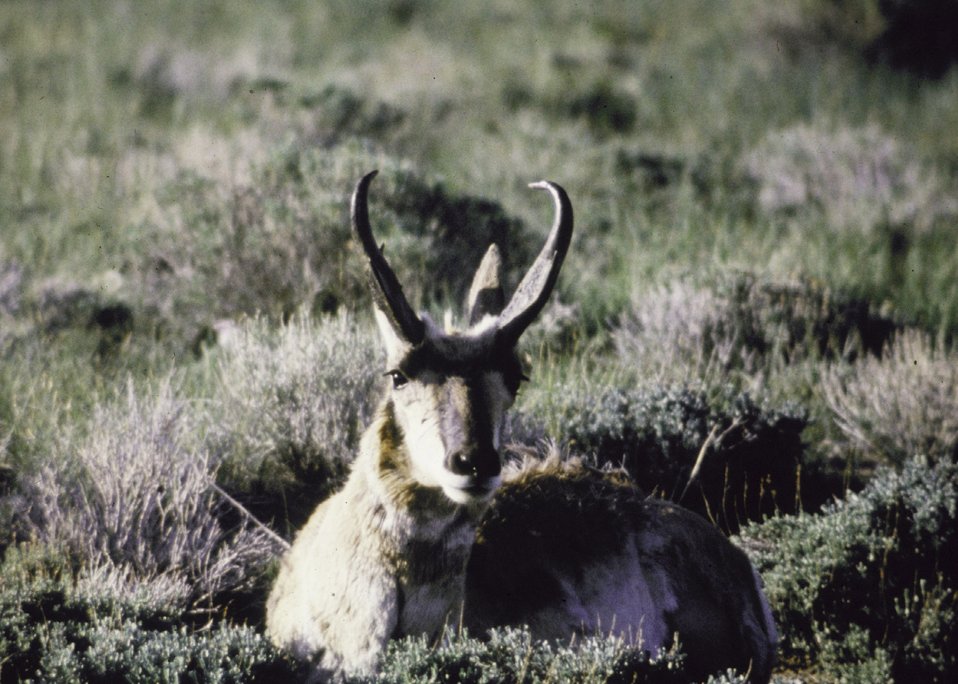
A buck Antelope in the Casper Field Office Area.